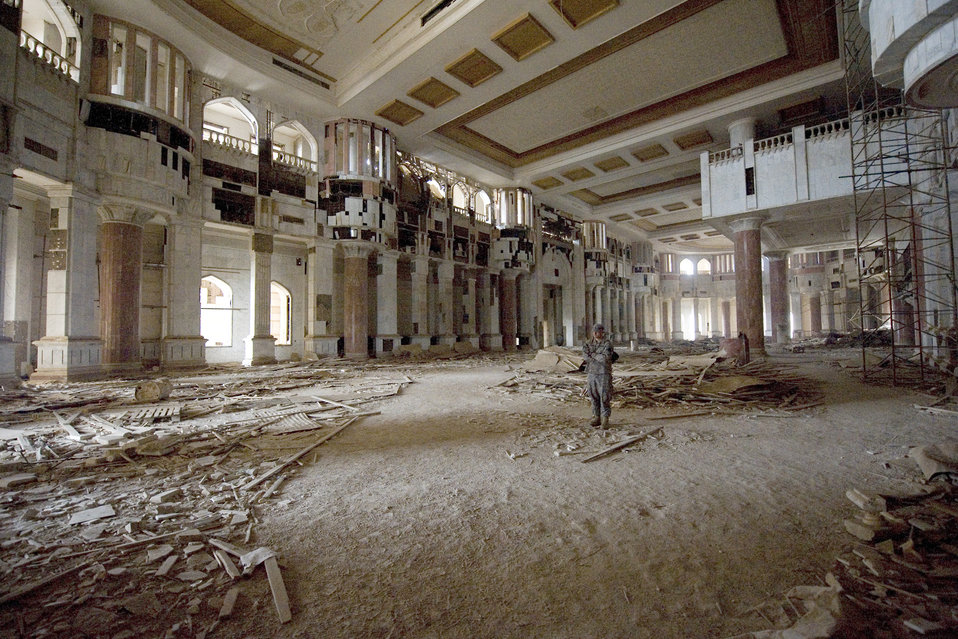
Chapel staff bolsters morale, mission focus from a unique perspective

A lone tour guide stands in a ballroom waiting for tour patrons to catch up the main tour group Jan. 29, 2011, at the Victory Over America Palace in Baghdad, Iraq. The Sather Air Base Chapel runs tours of historic sites on a regular basis, but time is running out as U.S. forces return portions of Victory Base Complex back to Iraqi military forces.